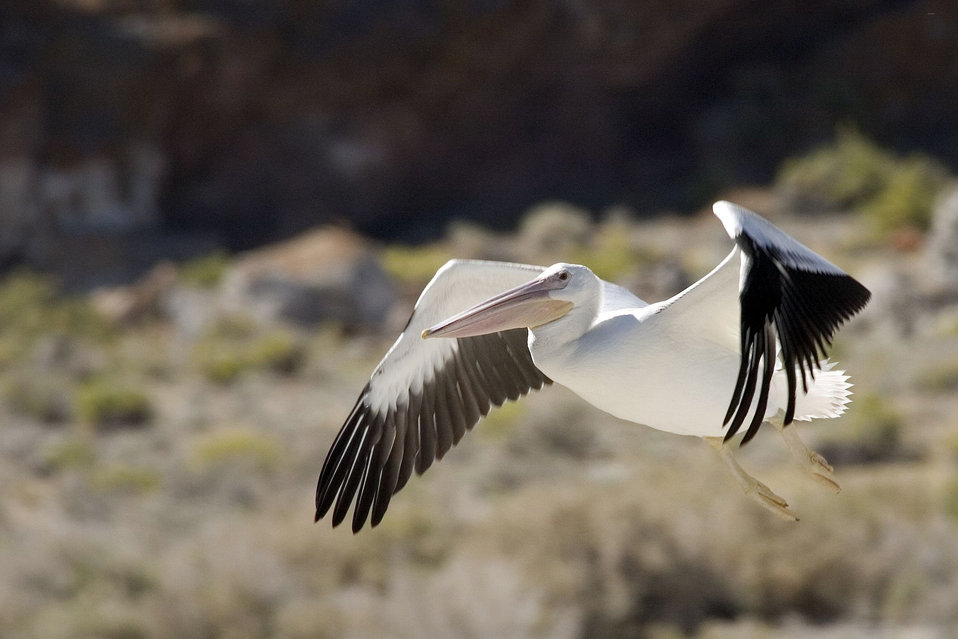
Anaho Island NWR juvenile American white pelican with hatchling